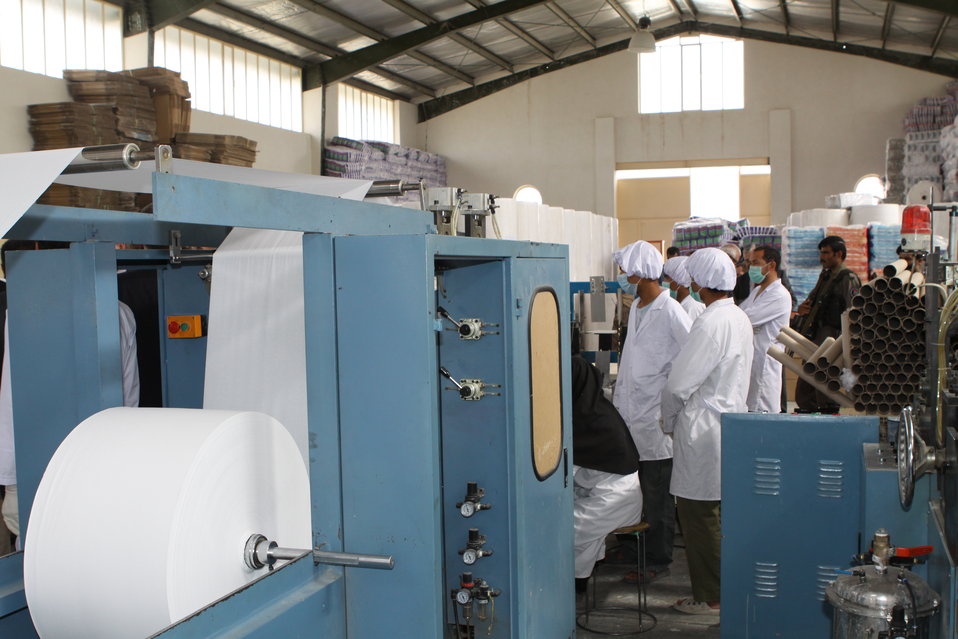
100525 Hirat Marble Conference 812